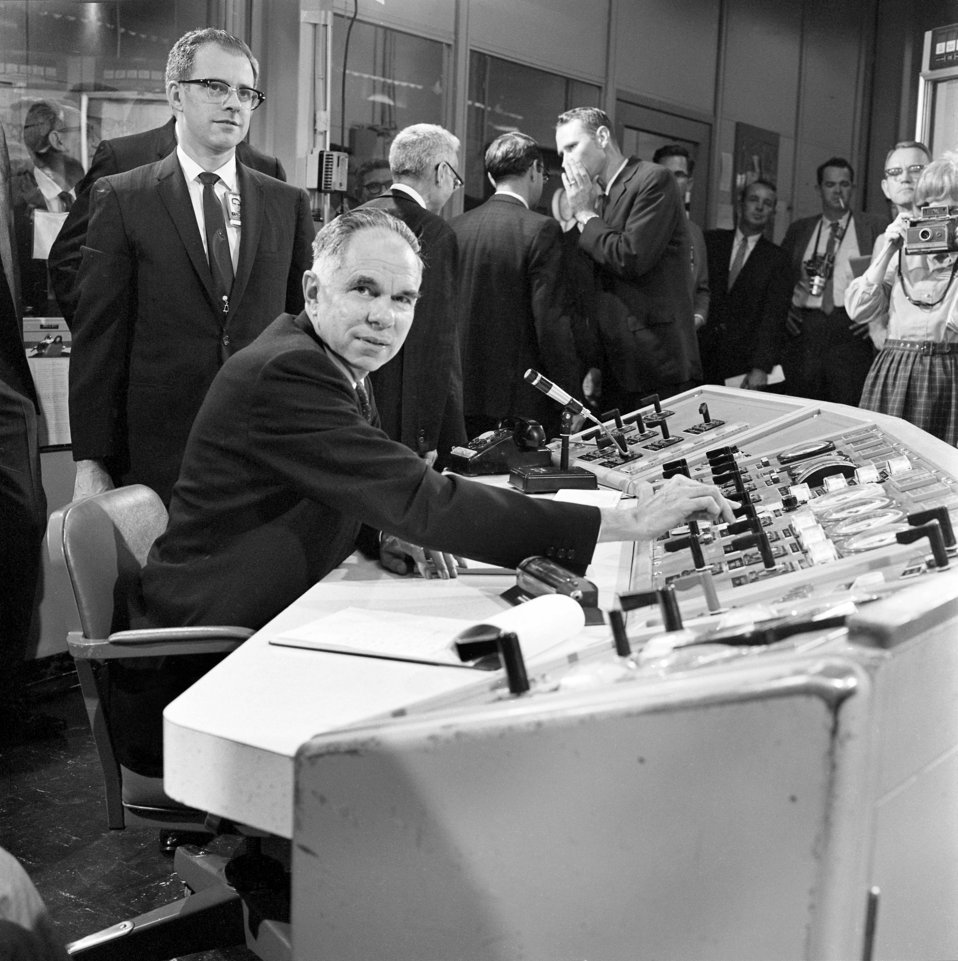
Startup of MSRE with U-233 with Atomic Energy Commission Chairman Glenn Seaborg on the controls 1968 Oak Ridge

68-510 DOE photo Frank Hoffman 10-10-1968 Molten Salt Reactor began operating with uranium-233 fuel Oak Ridge Tennessee